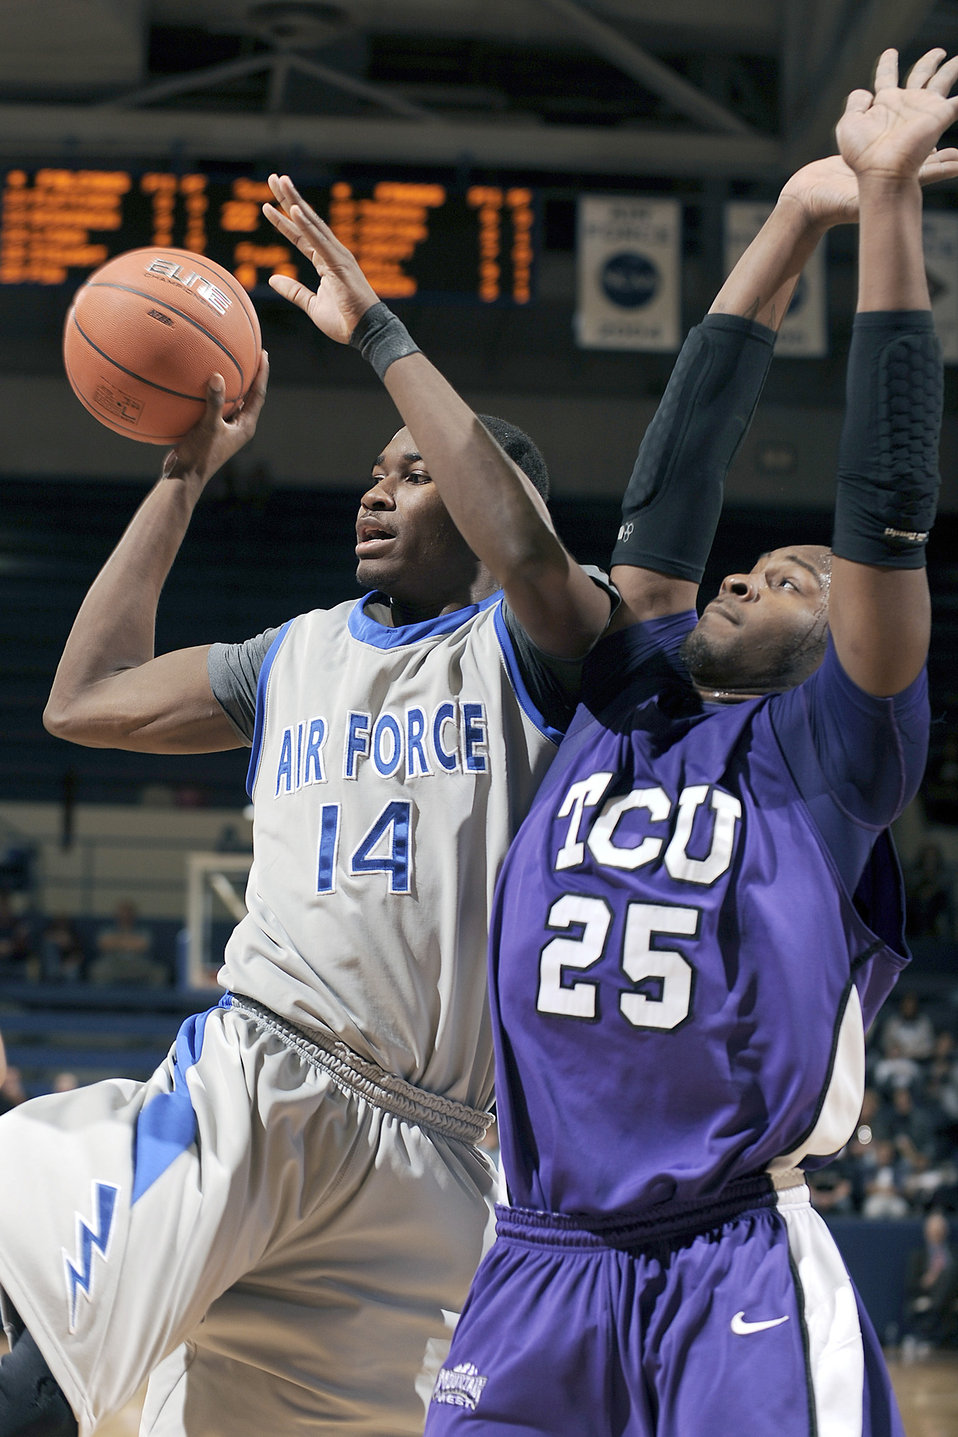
Falcons vs. Horned Frogs

The Air Force Academy's Mike Lyons dumps a pass in front of Texas Christian University's Greg Hill during the Falcons' final home game of the season March 2, 2011, at the Academy's Clune Arena.